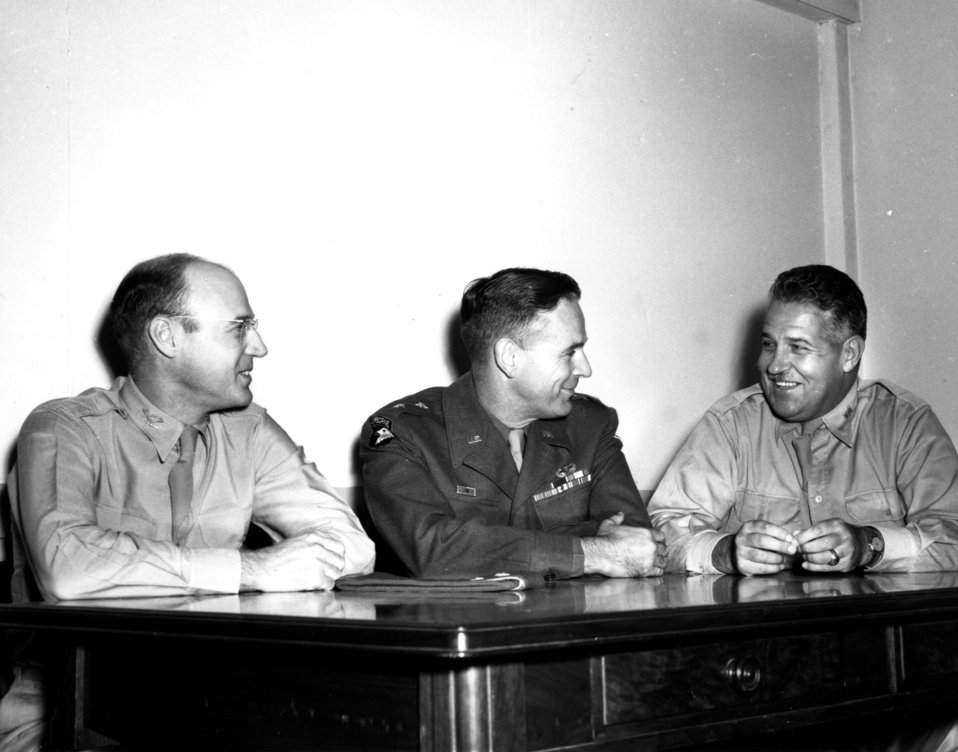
Army Activity at Oak Ridge